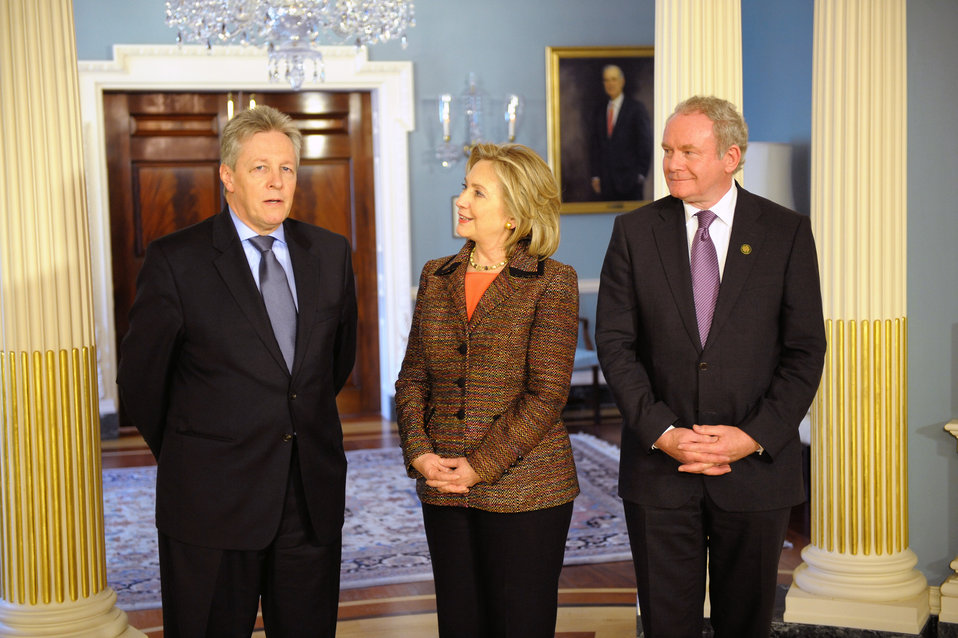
Secretary Clinton Speaks With First Minister Robinson and Deputy First Minister McGuinness of Northern Ireland

U.S. Secretary of State Hillary Rodham Clinton speaks with First Minister Peter Robinson and Deputy First Minister Martin McGuinness of Northern Ireland, at the U.S. Department of State in Washington, D.C., on March 18, 2011.